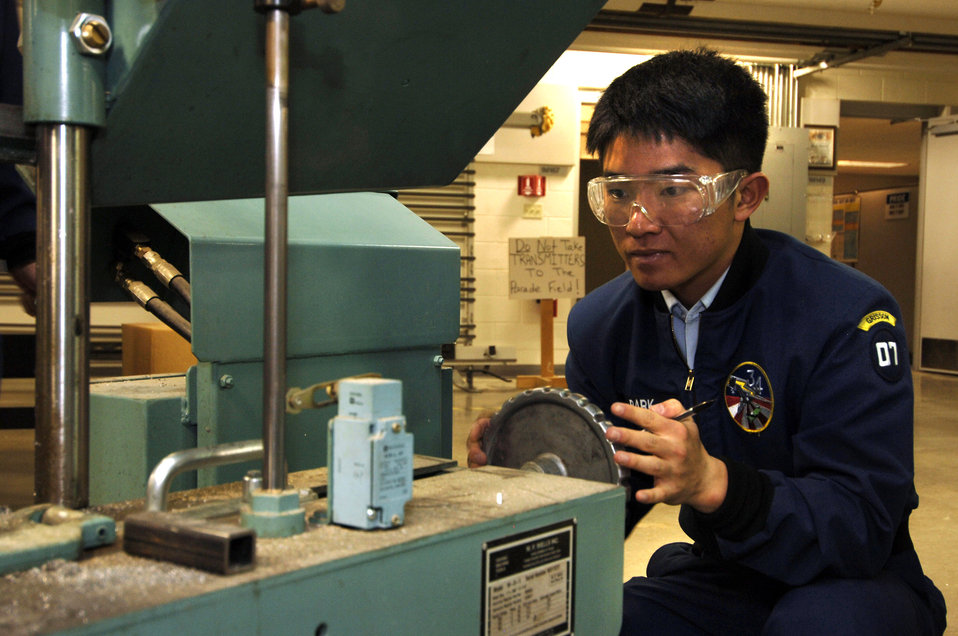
Satellite-savvy cadets accomplish out of world experiments

Senior Jae-Hyun Park cuts a part for the upcoming vibration test of Falcon Satellite-5. The satellite is being designed and built at the U.S. Air Force Academy in Colorado Springs, Colo. It will be tested and operated by the cadets through the USAFA Space Systems Research Center.